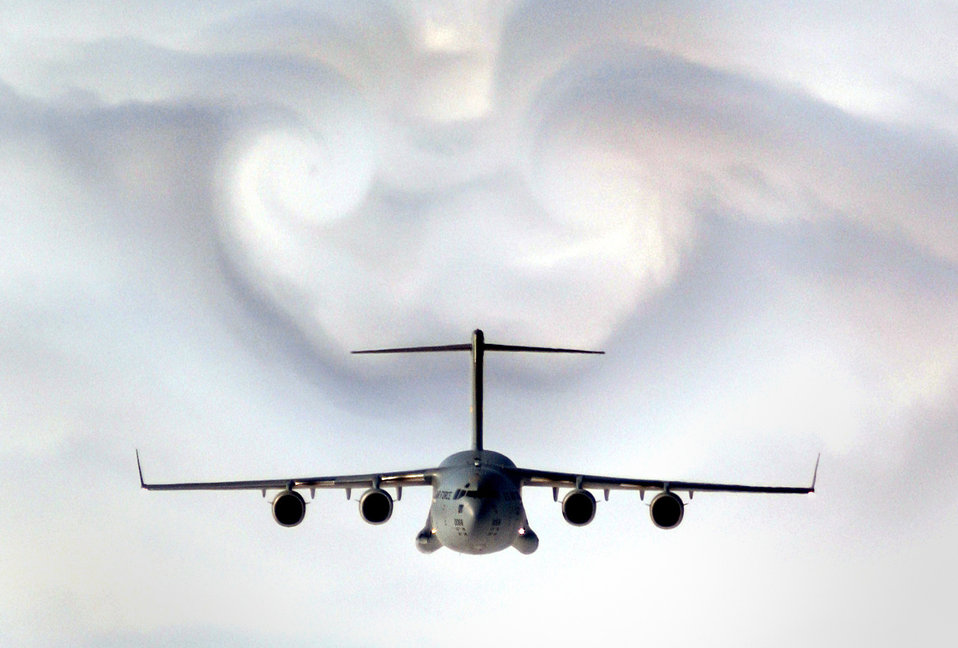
C-17 parts clouds

A C-17 Globemaster III parts the clouds over western South Carolina during a training mission Feb. 2. The aircraft is assigned to the state's Charleston Air Force Base.